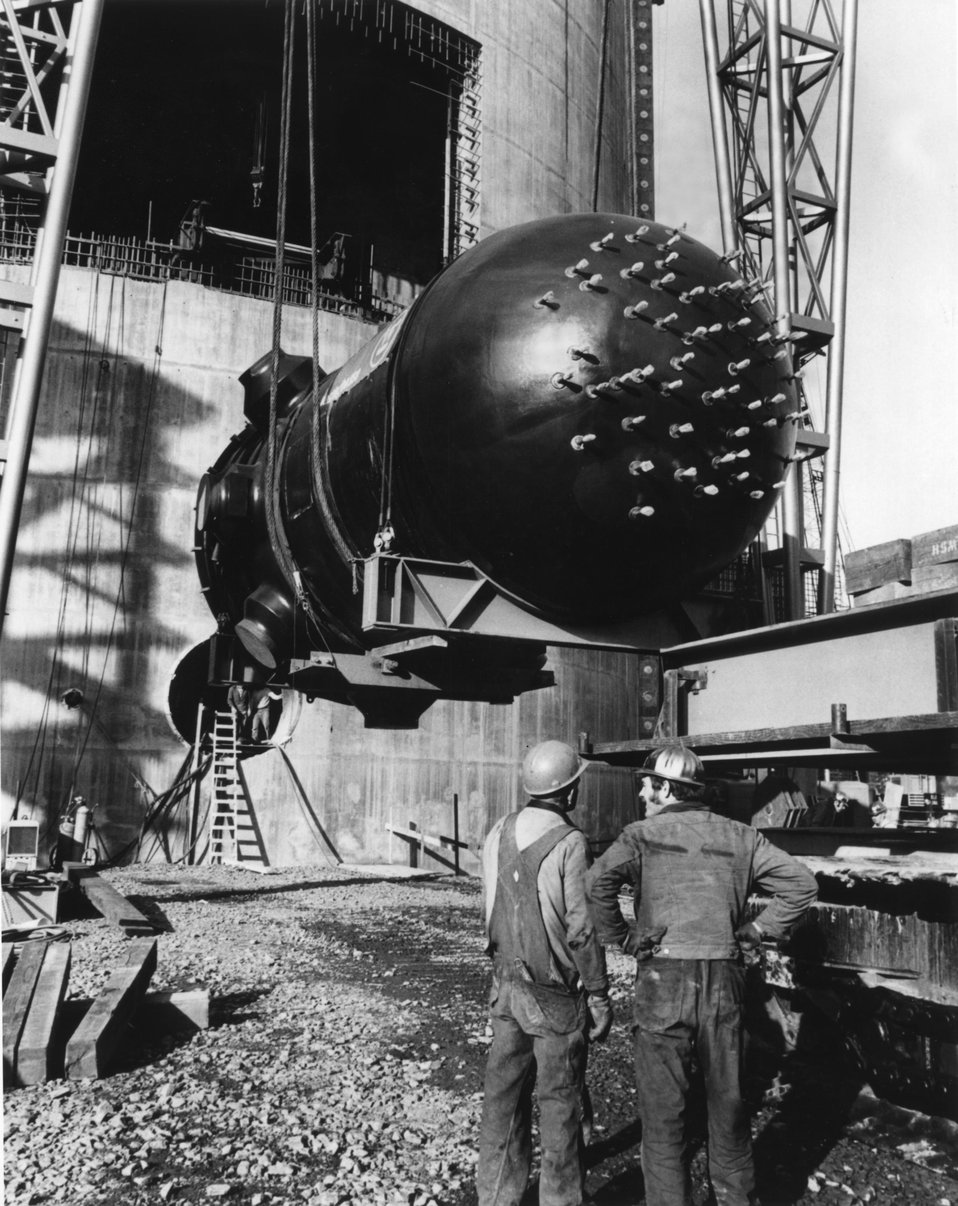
Construction scenes at Portland General Electric Co.'s Trojan Plantsite on on the Columbia River near Prescott, Oregon, illustrate the massiveness of equipment used in nuclear power plants. Circa 1974.